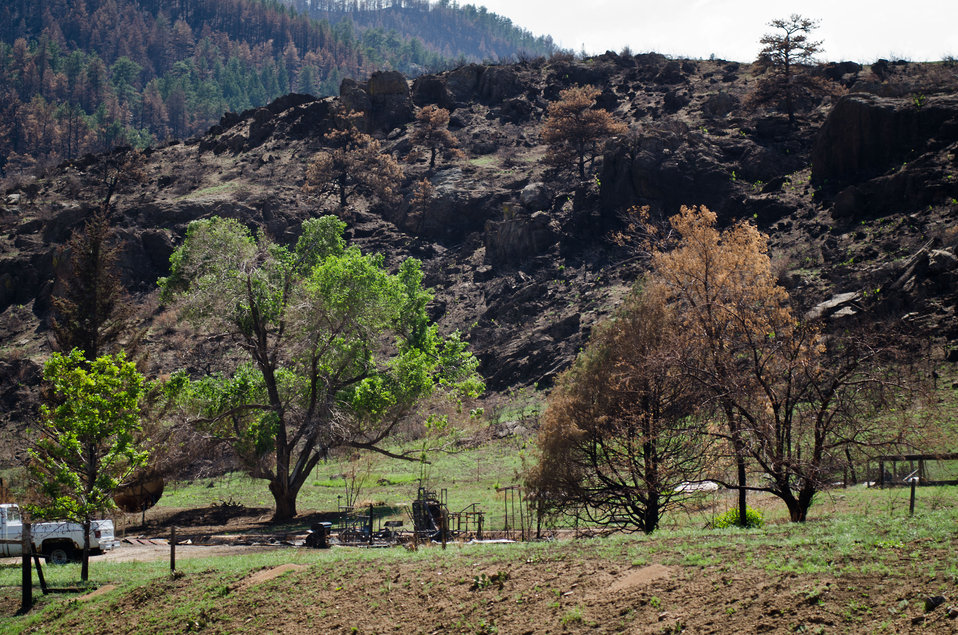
The remains of a burned building near Seaman Reservoir, drinking water resource for the City of Greeley, on Friday, July 20, 2012, near Fort Collins, Colo. Red areas are burnt trees with pine needles that will fall to the ground and form a mulch. Green areas are the remaining healthy trees that provide shade and protection to promote the growth of ground cover plants and shrub. Because of steep terrain, helicopters must be used to quickly deliver 1,800 tons of straw to Forest Service lands, and private and other lands that receive a seed mix and straw to promote ground cover plant growth on ash-covered lands. In total, 1,800 tons of straw will be applied during the 14-day operation. One quarter of the cost was paid by the City of Greeley and the U.S. Department of Agriculture funded the remainder. The Hewlett Gulch Fire was started by a camper’s alcohol stove, on May 14, 2012 at the saddle of a picturesque mountain ridge along the Hewlett Gulch Trail of Poudre Canyon, in the Roosevelt National Forest, 60 miles north of Denver, Colorado. At it’s peak, more than 400 firefighters were battling fires being pushed by 50 mph winds that helped blacken over 12-square-miles of dry ground cover, brush and trees. Many of the trees were already dead and tinder dry from beetle-kill. The water in the reservoir remains clean and clear, while downstream water flow has gone from clear water to nearly black flows heavily laden with ash, silt, and burnt debris that recent thunderstorms have already washed down from the mountainsides.